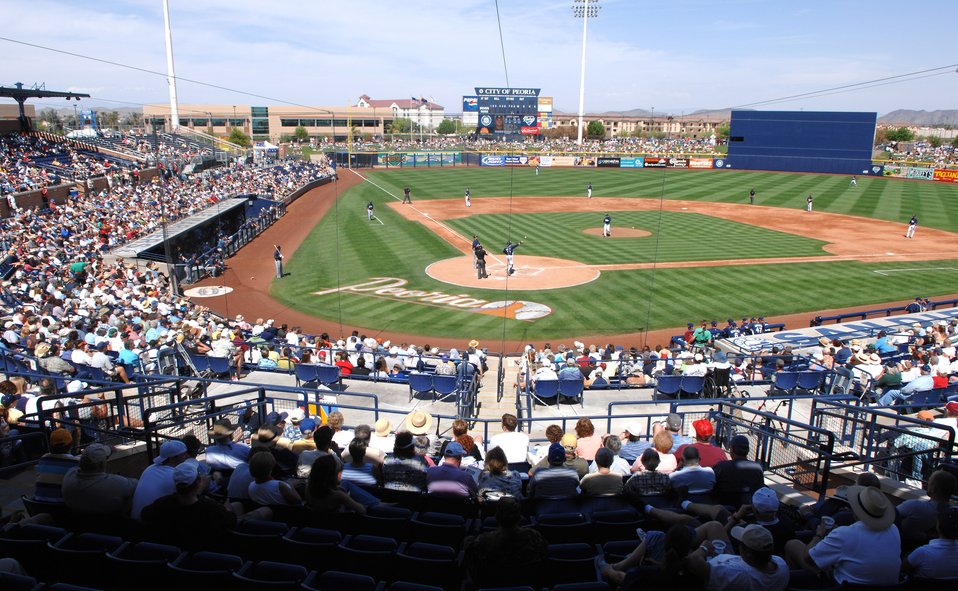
Play ball!

The city of Peoria, Ariz., and the Peoria Sports Complex played host to Air Force Week during a 2007 spring training baseball game between the San Diego Padres and the Milwaukee Brewers March 21. Airmen were invited to attend and the Luke Air Force Base Honor Guard posted the colors. The Wings of Blue parachute demonstration team jumped in the game ball.